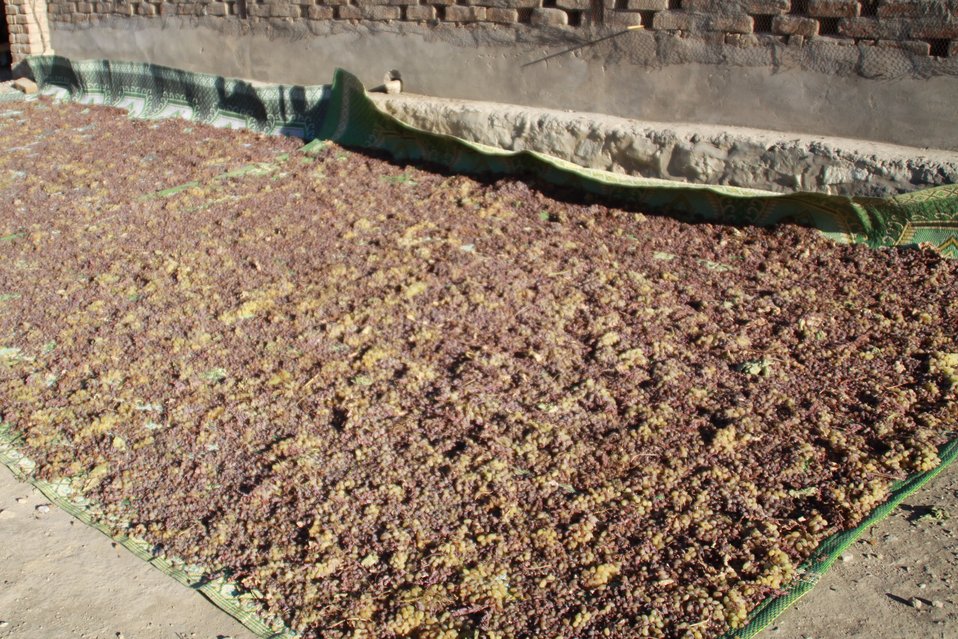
AVIPA Plus Wheat Seed Distribution 101005